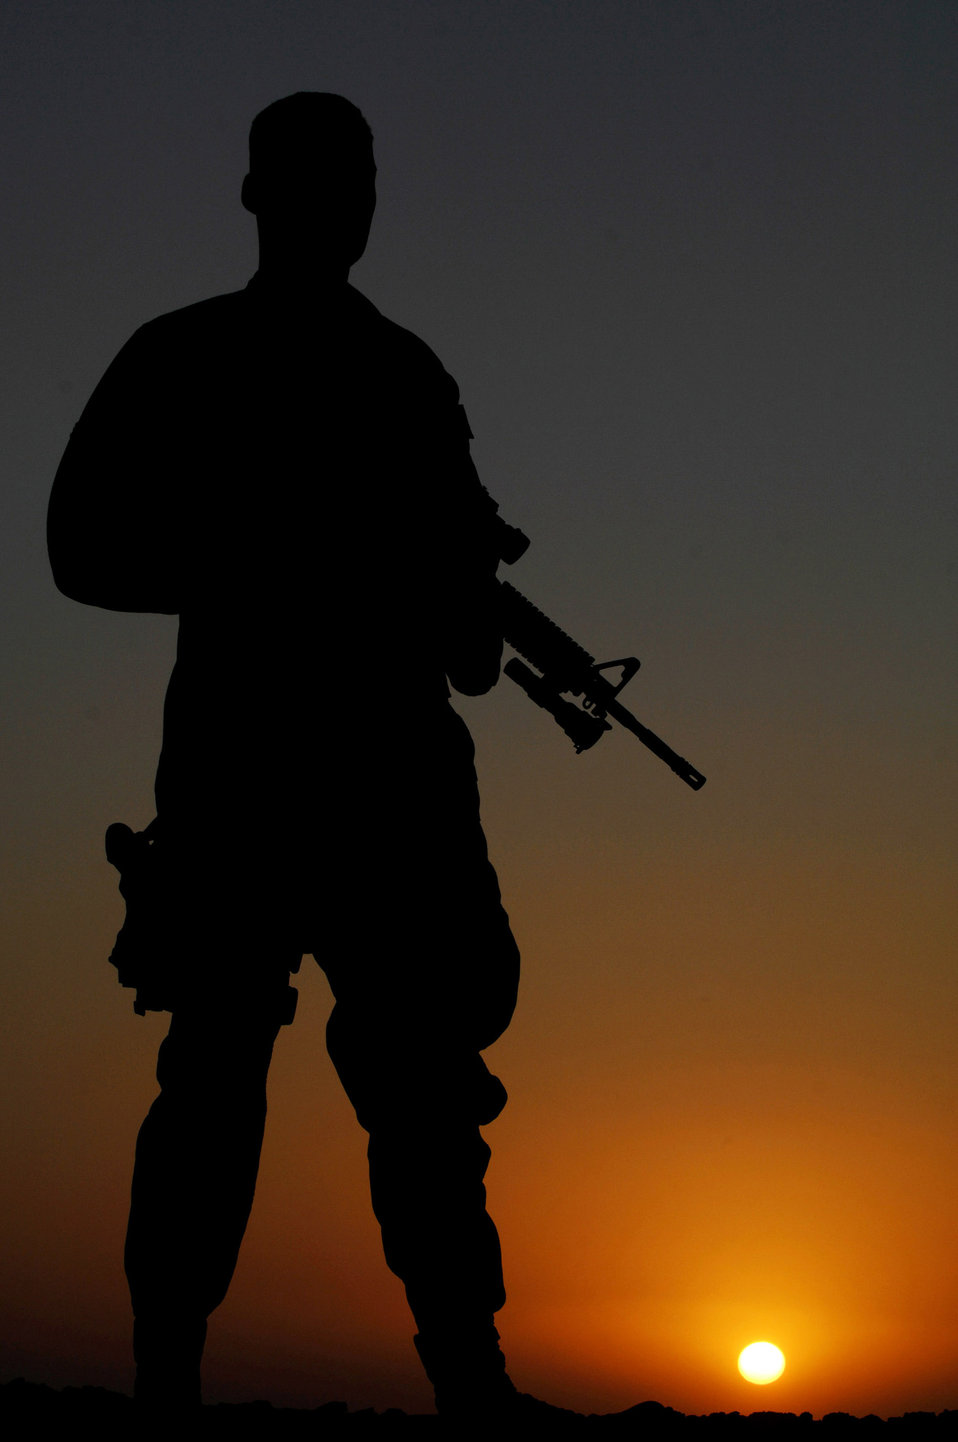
Keeping watch

Airman Kevin Cook stands watch late into the evening Jan. 15 at Ali Base, Iraq. Airmen from the Provost Marshall Office are working in-lieu-of positions for the Army to help provide base-level security.